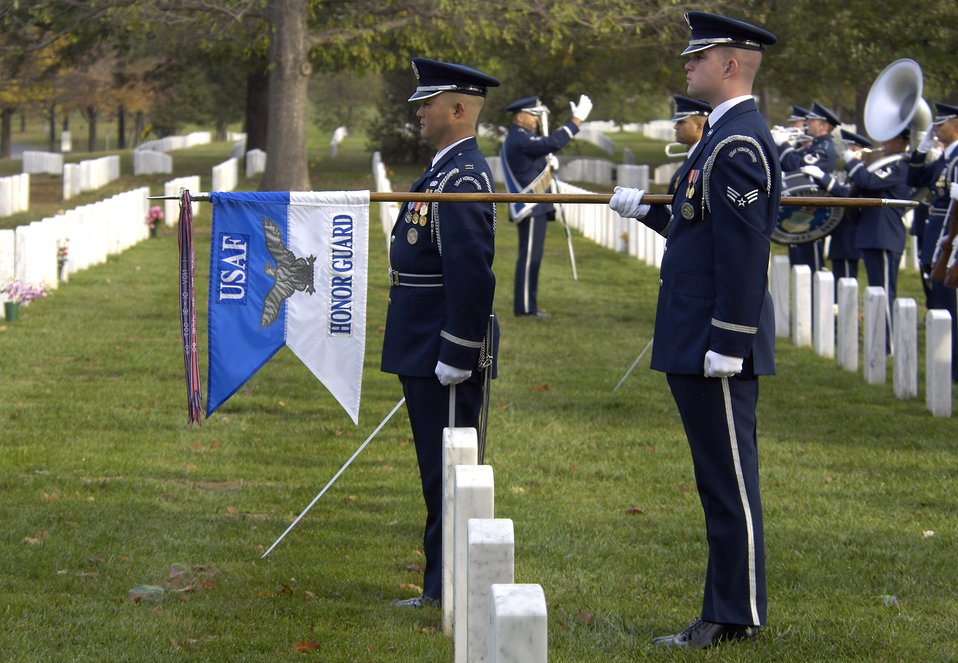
Honor guard transitions to new funeral guidelines

Members of the Air Force Honor Guard conduct a military honors funeral ceremony Nov. 1. for retired Lt. Gen. Marvin McNickle at Arlington National Cemetery, Washington, D.C.